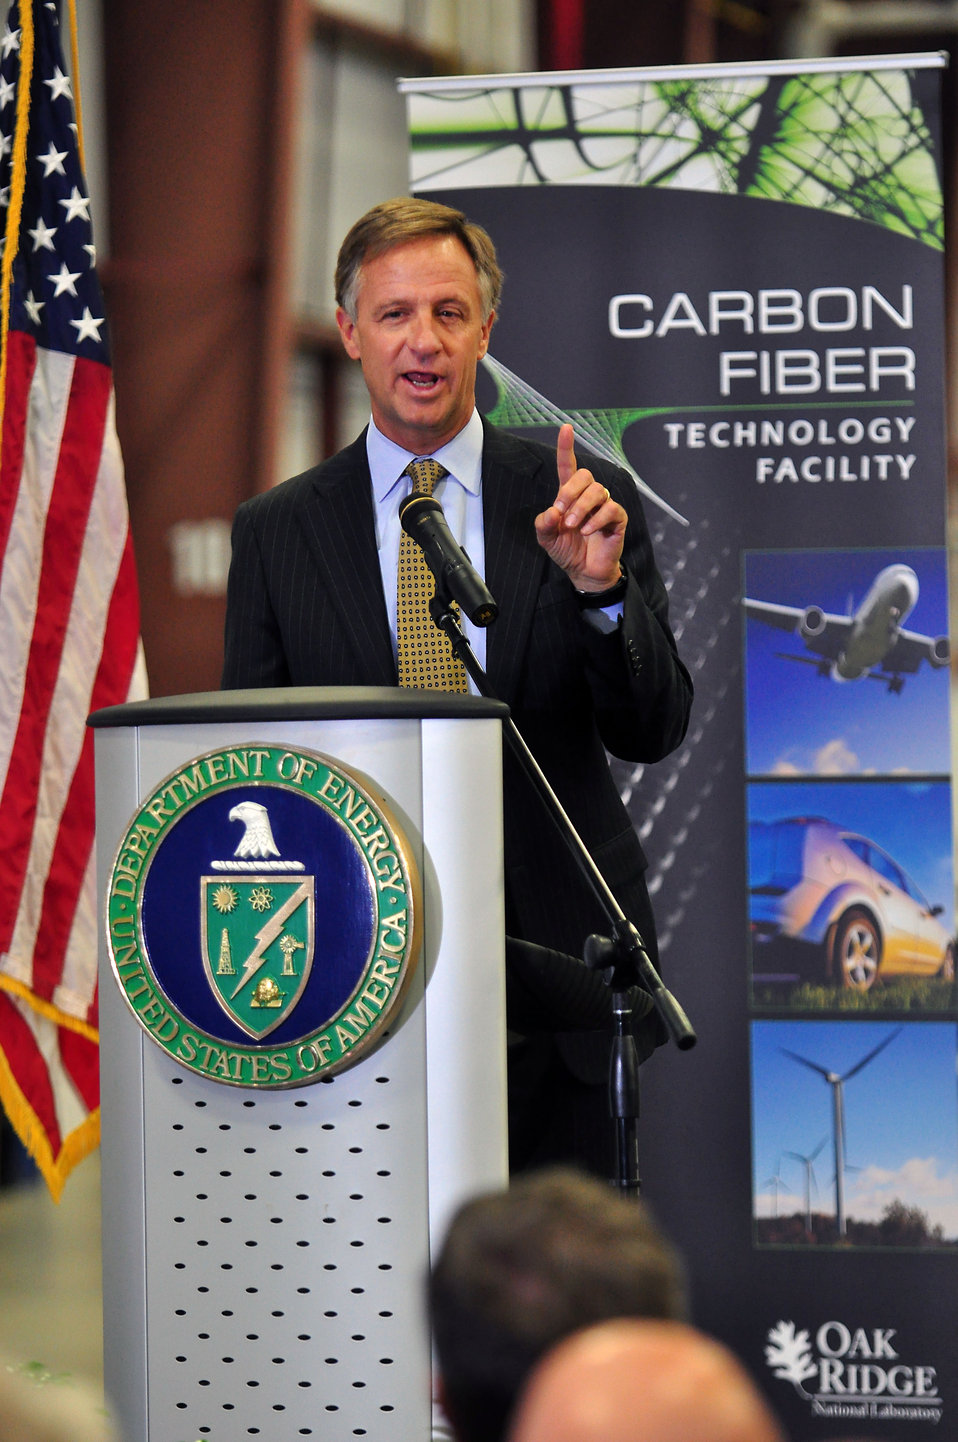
Carbon Fiber Technology Facilty Open House Oak Ridge Tennessee

13-025 DOE photo Lynn Freeny
Governor State of Tennessee Bill Haslam